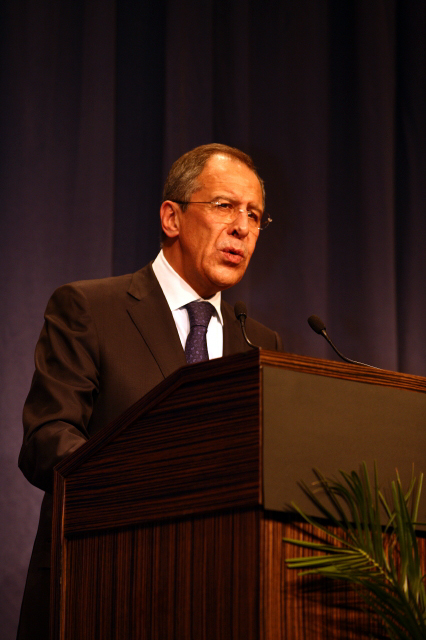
Press Conference With Russian Foreign Minister

Press conference after dinner meeting between U.S. Secretary of State Hillary Rodham Clinton and Russian Foreign Minister Sergey Lavrov in Geneva, Switzerland March 6, 2009.